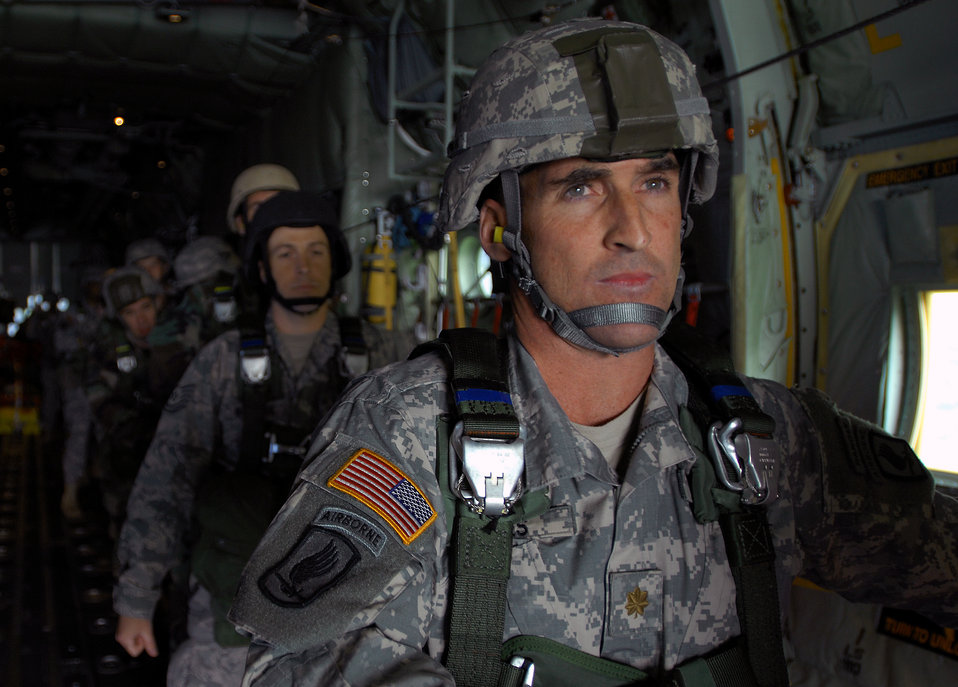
Airmen, Soldiers make first jump from Ramstein C-130J

An Army partrooper peers out the back of a new C-130J Super Hercules before jumping during the first Ramstein Air Base, Germany, C-130J personnel drop over southern Germany May 4.